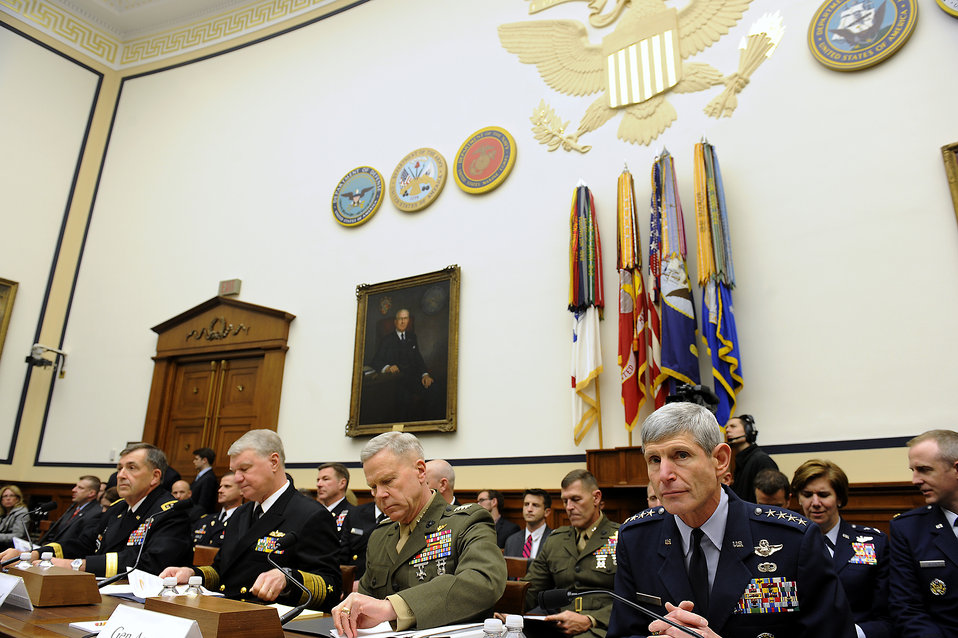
House Armed Services Committee

Air Force Chief of Staff Gen. Norton Schwartz (right) prepares to testify before the House Armed Services Committee in Washington, D.C., on April 7, 2011. General Schwartz was joined by (left to right) Army Vice Chief of Staff Gen. Peter Chiarelli, Chief of Naval Operations Adm. Gary Roughead, and Marine Corps Commandant Gen. James Amos.